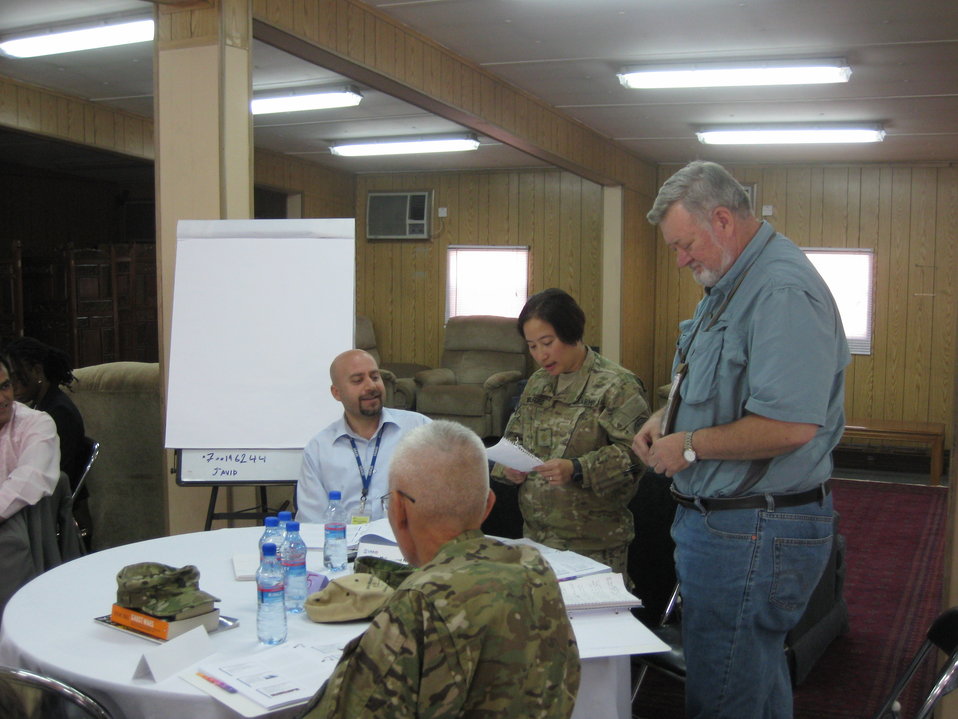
Afghan Youth Voices 035